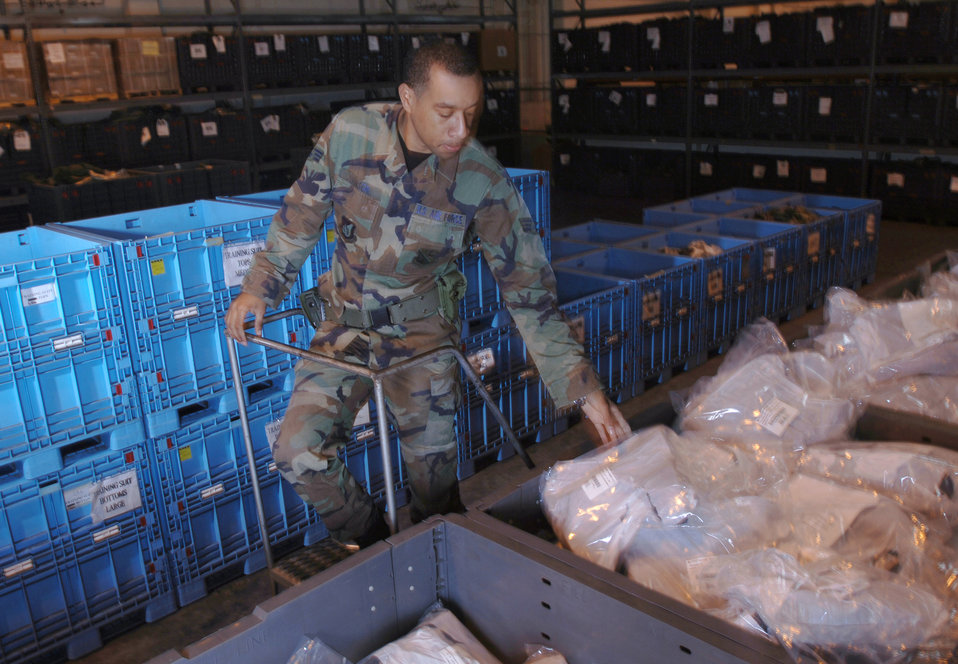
Readiness troops

YOKOTA AIR BASE, Japan (AFPN) -- Senior Airman Jamal Johnson inspects a bin of overboots for serviceability during inventory. Airman Johnson is a war readiness technician with the 374th Logistics Readiness Squadron. The squadron manages 26,000 critical supplies and equipment.